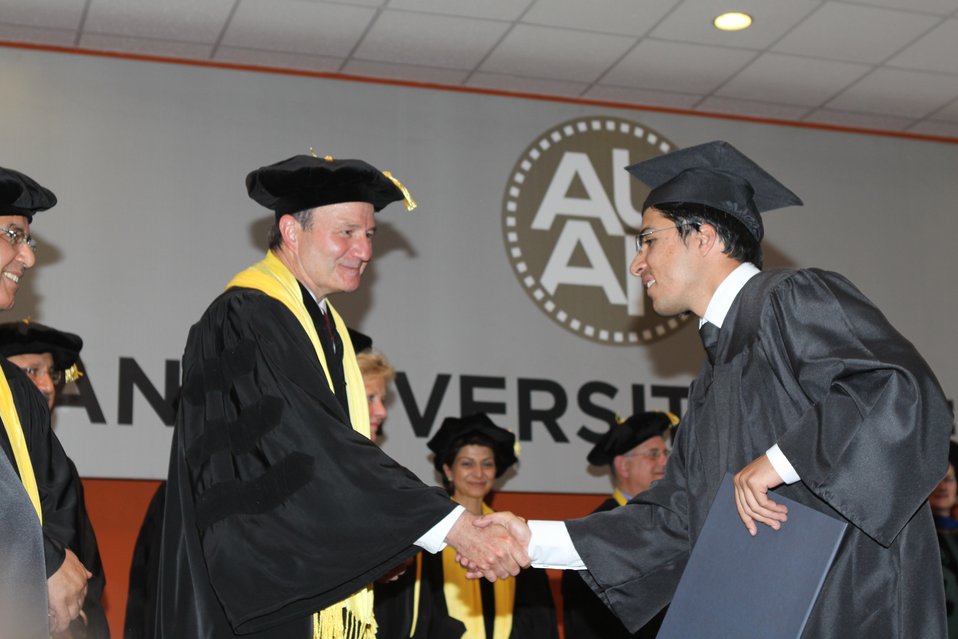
100526 AUAF Graduation 291